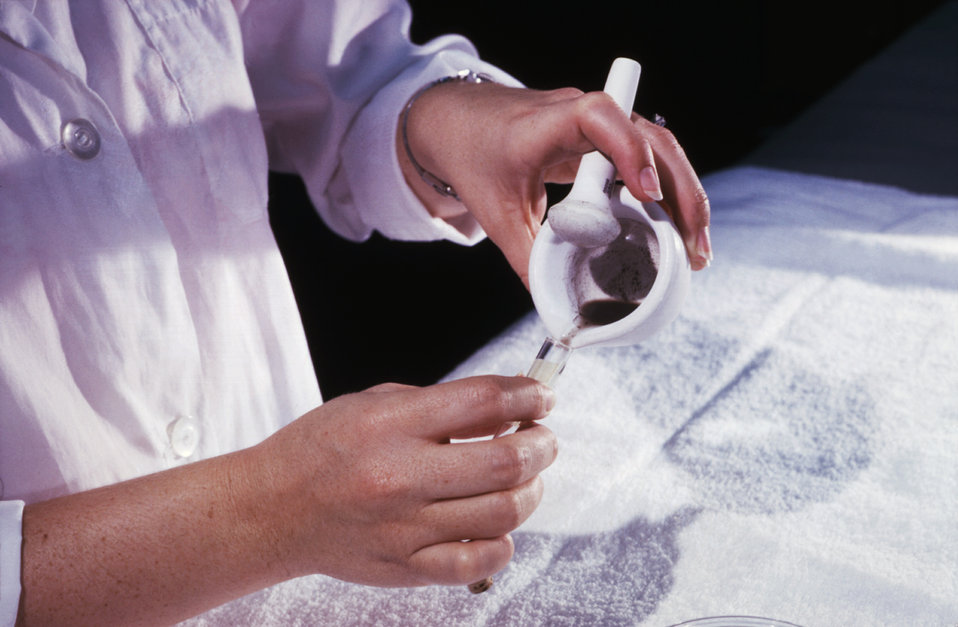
This CDC laboratory technician is pouring a ground mosquito suspension into a vial during an arbovirus study.